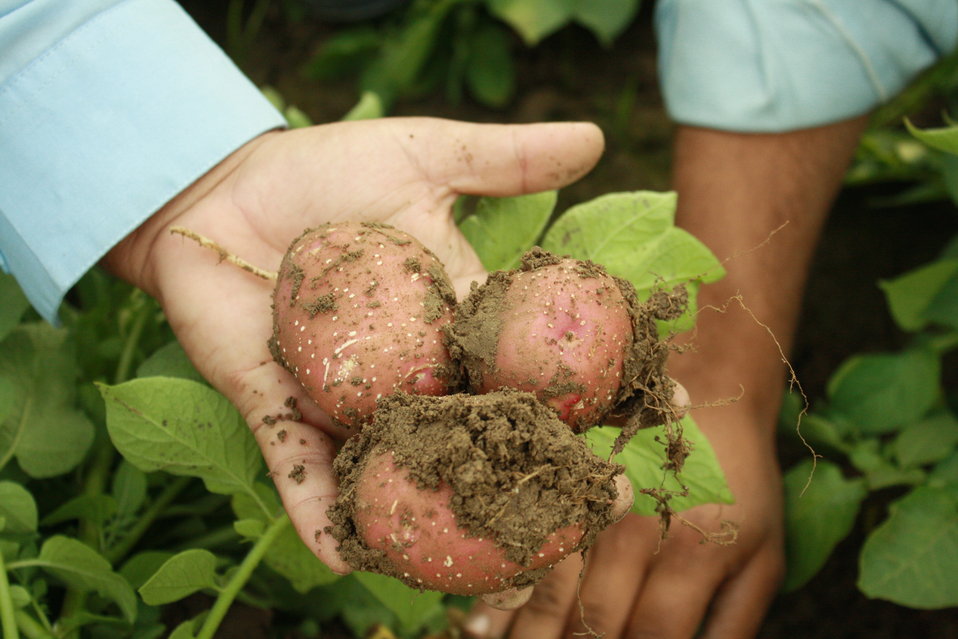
Fresh potatos from the farms in Swat